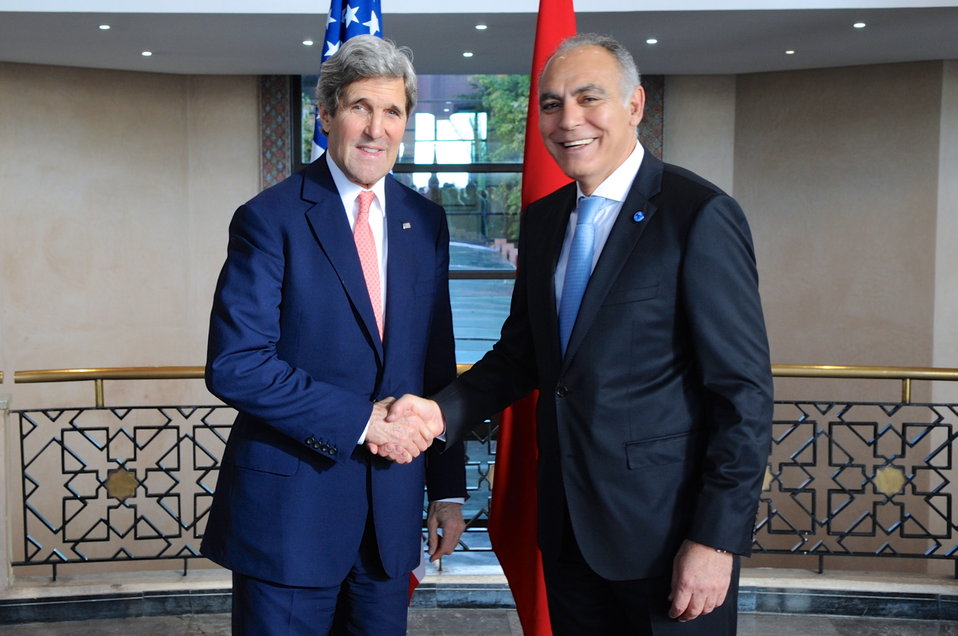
Moroccan Foreign Minister Greets Secretary Kerry Before Strategic Dialogue in Rabat

Moroccan Foreign Minister Salaheddine Mezouar greets U.S. Secretary of State John Kerry as he arrives at the Ministry of Foreign Affairs in Rabat, Morocco for a Strategic Dialogue on April 4, 2014.